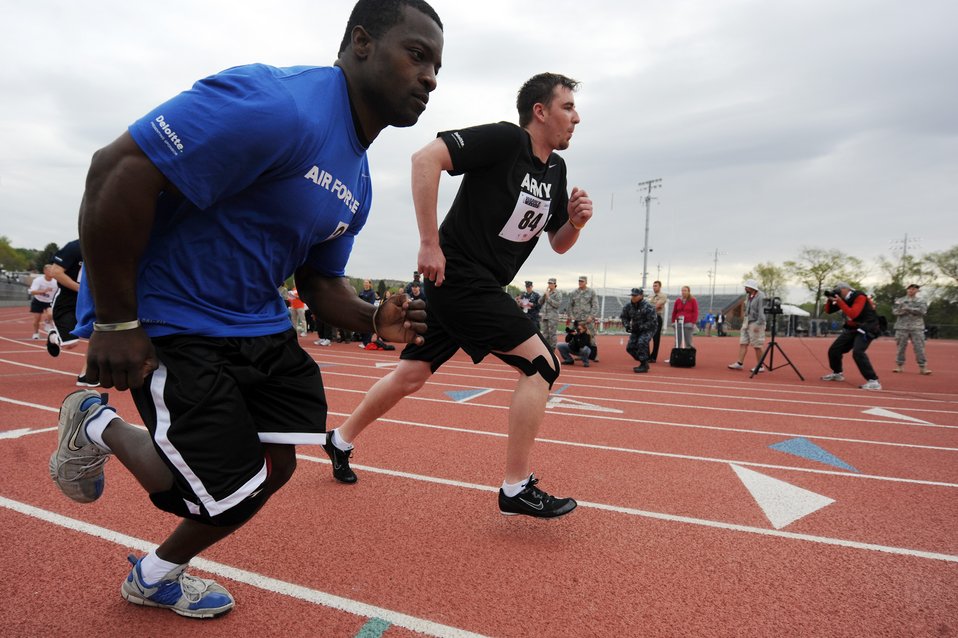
2011 Warrior Games

Air Force athlete Matt Sanders runs in the 800 meter dash May 17, 2011, during a track event at the 2011 Warrior Games at the U.S. Olympic Training Center in Colorado Springs, Colo. Some 200 wounded warriors and disabled veterans from all the military services are competing in paralympic-style athletic events May 16 through May 21.